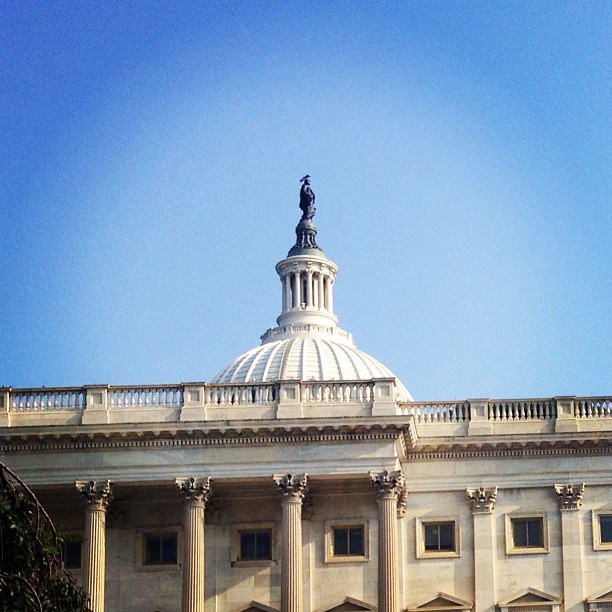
Sun shining on Freedom this morning at Capitol. #architecture